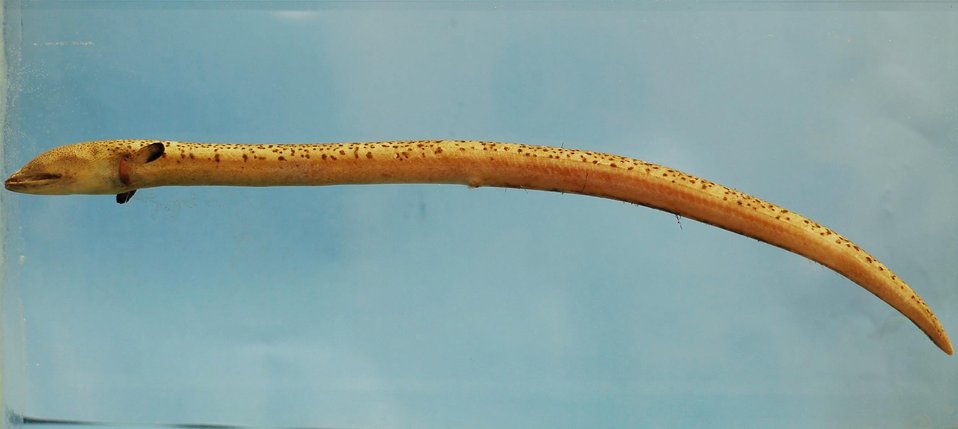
Stippled spoon-nose eel or snapper eel ( Echiophis punctifer )